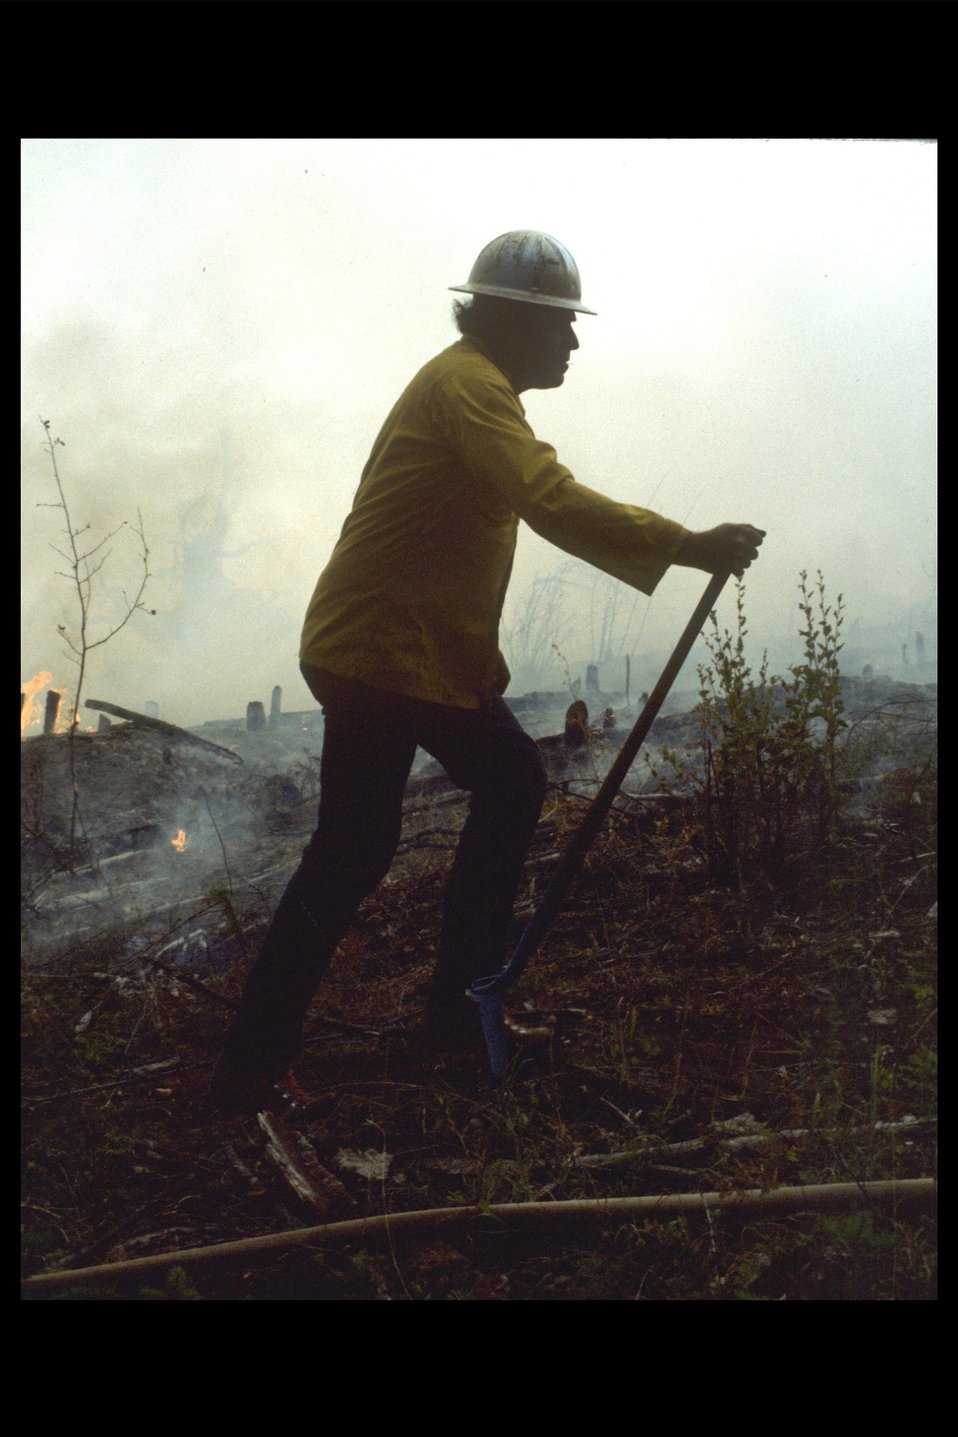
His Last Dispatch," George Neville on Morine Creek Fire.